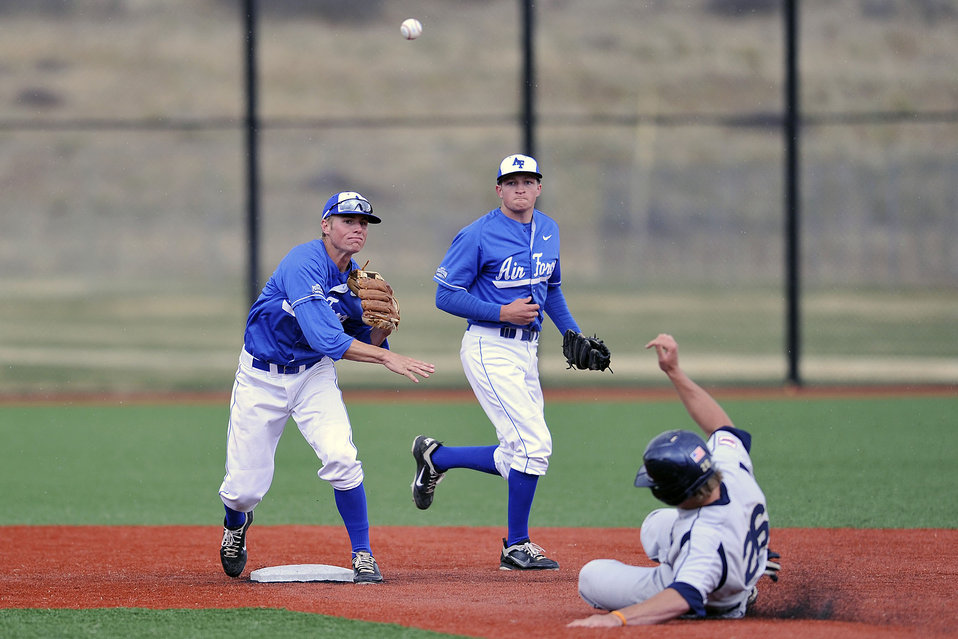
Falcons vs. Bears

Air Force Academy Falcons junior 2nd baseman Blair Roberts completes the double play against the Northern Colorado Bears April 19, 2011, at Falcon Field in Colorado Springs, Colo. The Bears took the lead in the top of the ninth with a two-run blast, lifting them over the Falcons 6-5.